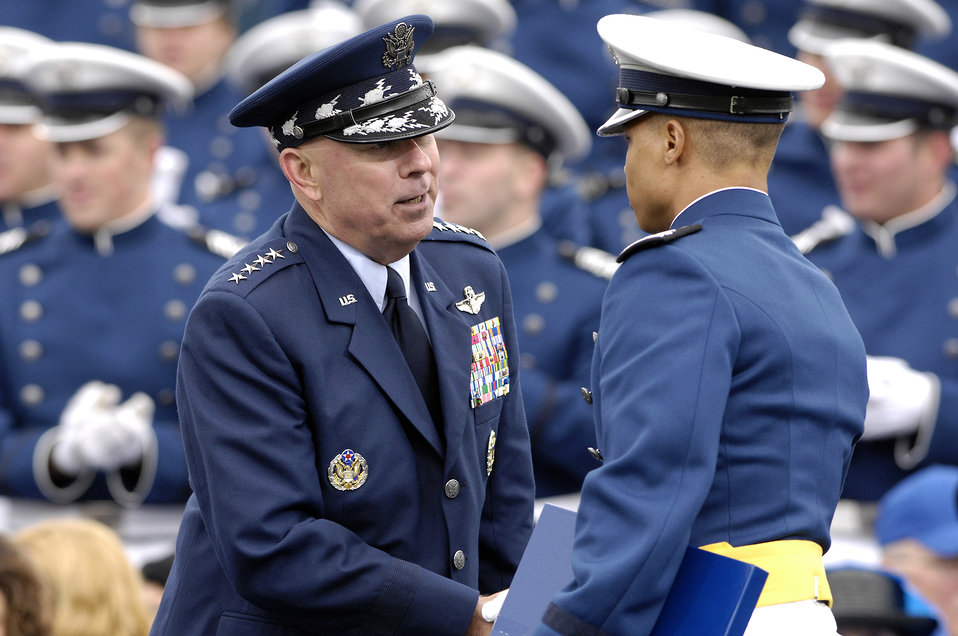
The 50th Academy class graduates

Air Force Chief of Staff Gen. T. Michael Moseley offers congratulations to a newly commissioned cadet during the U.S. Air Force Academy Class of 2008 graduation ceremony at Falcon Stadium May 28. The Class of 2008 graduated 1,012 cadets.